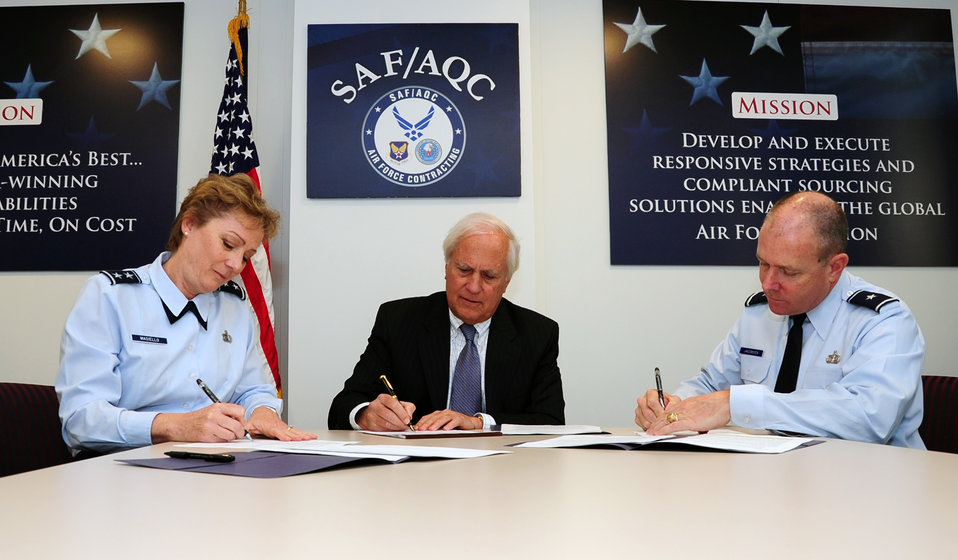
Air Force takes steps to advance contact fraud fight

Maj. Gen. Wendy Masiello, the deputy assistant secretary for the contracting office of the assistant secretary of the Office for Acquisitions; Steven Shaw, the deputy general counsel for contractor responsibility of the Office of the Air Force General Counsel; and Brig. Gen. Kevin Jacobson, the commander of the Air Force Office of Special Investigations sign a memorandum of understanding at the Pentagon in Washington, D.C., Dec. 9, 2011. The memorandum pledges interagency cooperation in the procurement fraud fight.